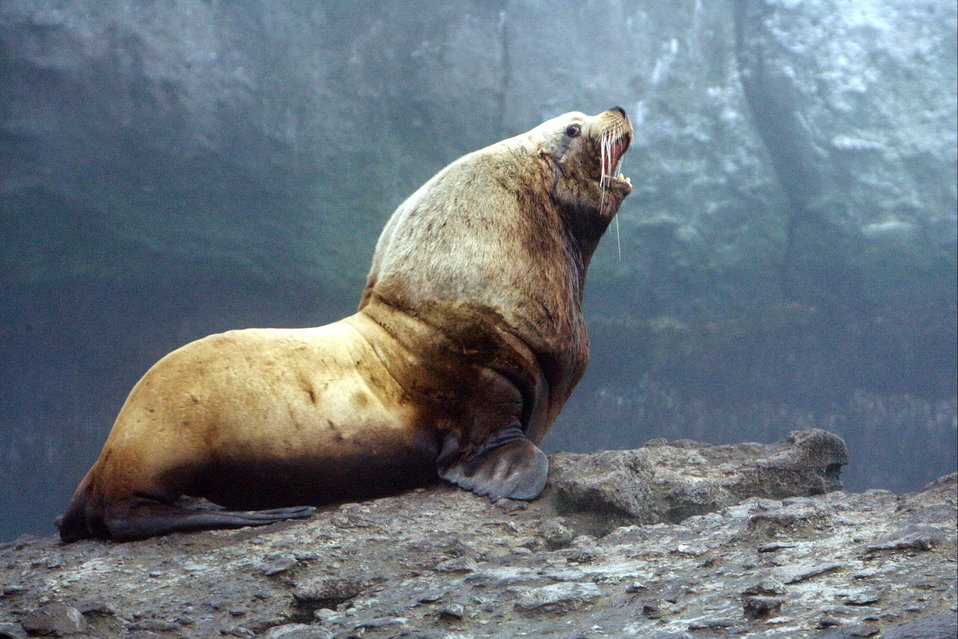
Sea Lion 2

Male sea lion barking.